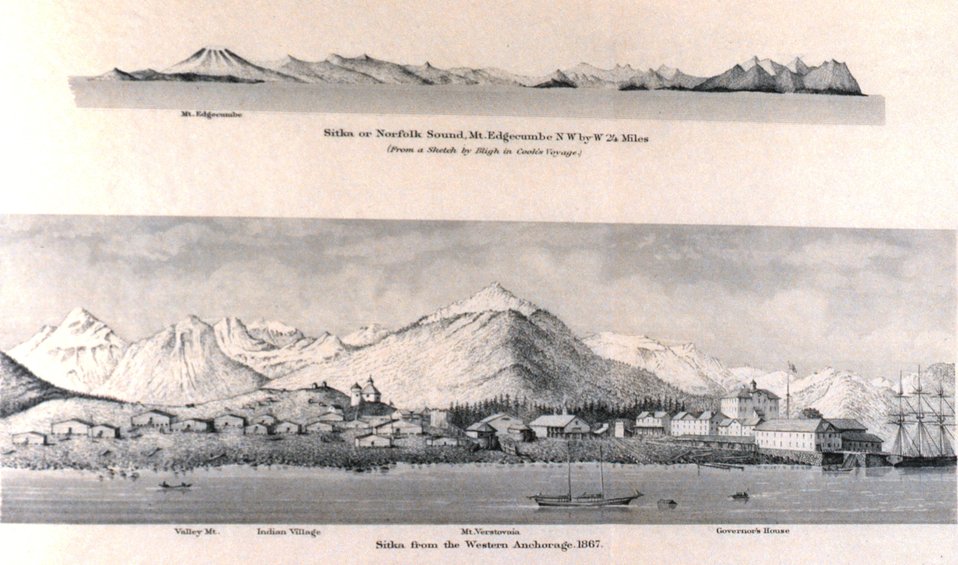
Sitka or Norfolk Sound, Mt. Edgecumbe. Sitka from the western anchorage 1867. In: Pacific Coast Pilot Alaska Part I 1883. P.136. Library call number VK943 .N3 1883.